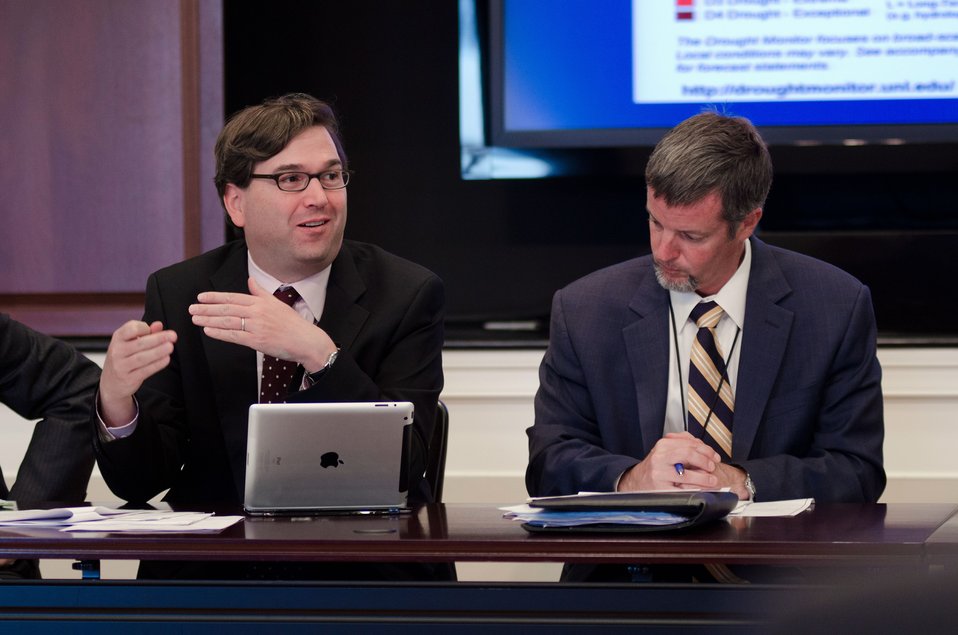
National Economic Council Principal Deputy Director Jason Furman (left), addresses the White House Rural Council at the Executive Office Building in Washington, D.C. on Friday, July 27, 2012. Agriculture Secretary Tom Vilsack chaired the meeting to update council members and stakeholders on the Administration response to the drought and open a discussion to explore ways to assist American farmers and ranchers suffering in its affects. Following President Obama’s instructions of using existing programs to support struggling farmers and ranchers the U.S. Department of Agriculture (USDA) has implemented several processes to assist American farmers and ranchers. USDA has streamlined drought disaster declarations directly from Drought Monitor data, allowed nearly 30 million acres under the Conservation Reserve Program (CRP) to be used for emergency haying or grazing, lowered payment reduction for CRP lands that qualify for emergency haying and grazing in 2012, from 25% to 10%, allowed producers to modify current Environmental Quality Incentives Program (EQIP) contracts to allow for grazing, livestock watering and other conservation activities to address drought conditions, and has authorized haying and grazing of Wetlands Reserve Program (WRP) easement area in drought-affected areas where haying and grazing is consistent with conservation of wildlife habitat and wetlands, and reduced the interest rate for Farm Service Agency (FSA) Emergency loans from 3.75% to 2.25%.